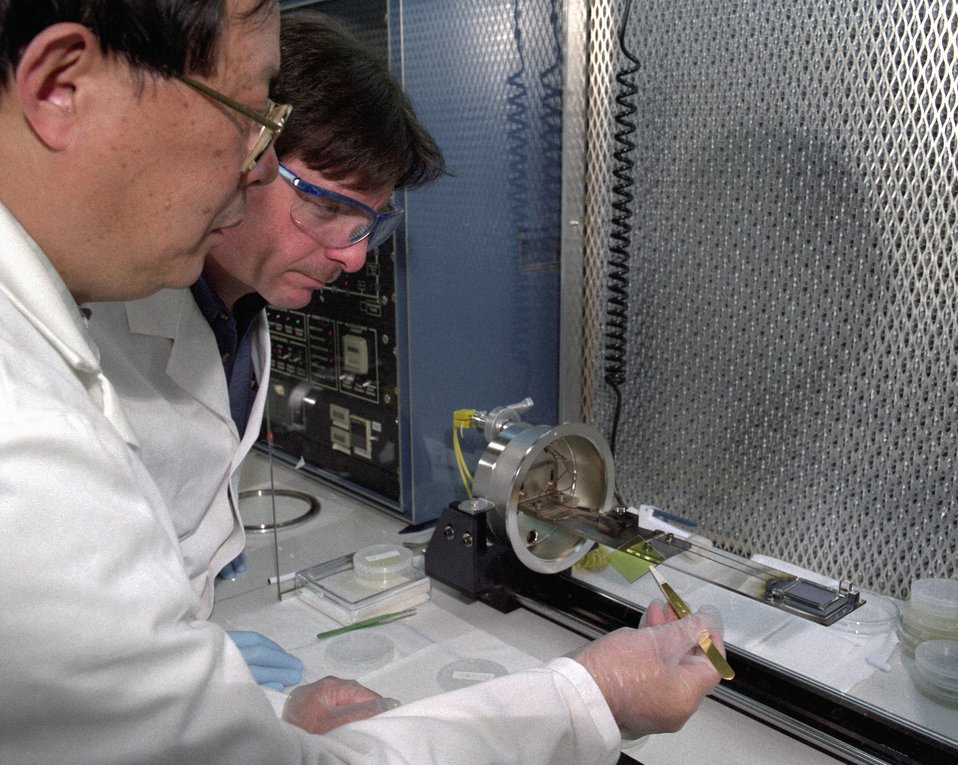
Solar Breakthroughs in the Lab

An NREL research team led the way with a 16.5%-efficient cadmium telluride (CdTe) PV cell and device structure that surpassed the former world record by 0.7%, absolute. Innovations include a CdSn transparent conducting oxide layer (for superior conductivity, strong optical transmittance, and a smoother surface) and a ZnSn buffer layer (for improved performance and reproducibility). Dr. Xuanzhi Wu and other NREL CdTe Team members, including James Keane, fabricated the record CdTe cell; Keane has also assisted the CIS Team in making world-record CIS cells.